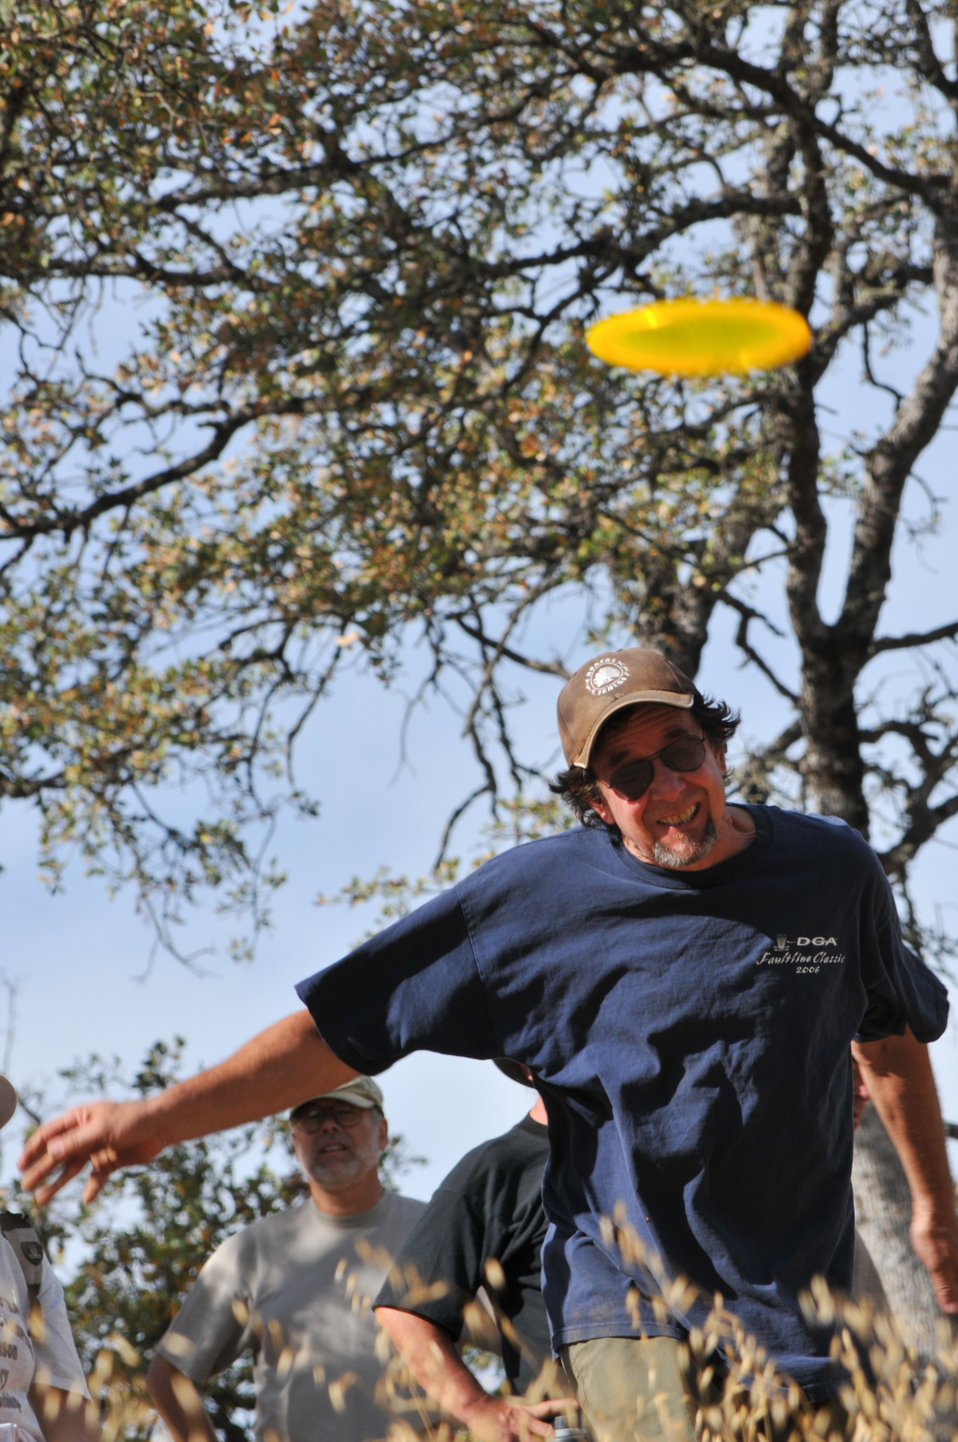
BLACK BUTTE LAKE, Calif. (Oct. 18, 2010) -- A disc golfer tees off during the Professional Disc Golf Association's Norcal Series Championships here Oct. 16. The U.S. Army Corps of Engineers Sacramento District’s Black Butte hosted the tournament Oct. 15-17 at its new disc golf course, built on park lands by The Orland Aces disc golf club under a partnership with the Corps. More than 150 disc golfers from as far as Texas competed in the tournament.